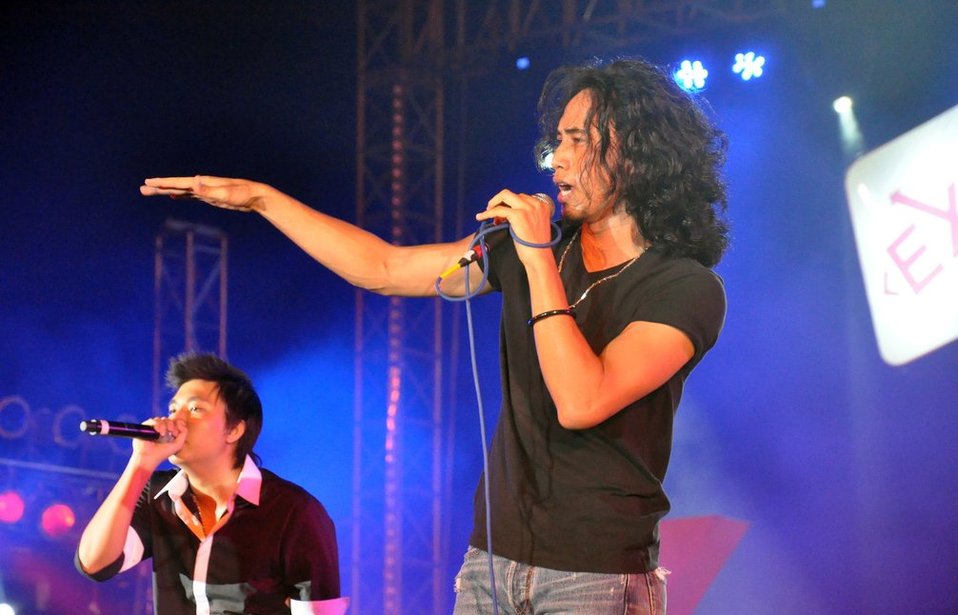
Vietnamese rocker Pham Anh Khoa performs at the USAID-sponsored MTV EXIT concert in Hanoi to fight trafficking and exploitation of people.